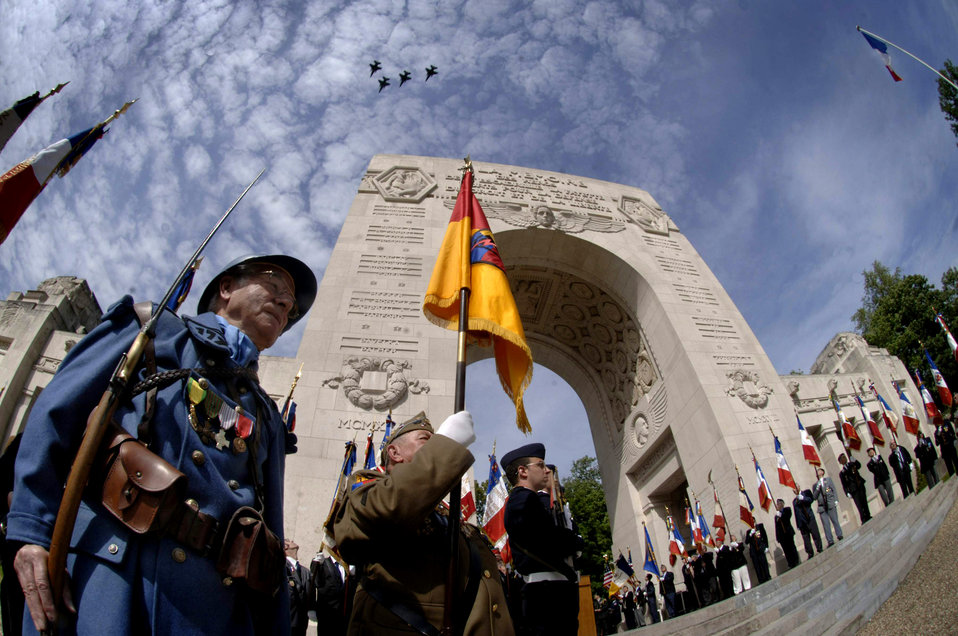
America's first combat aviators memorialized

A missing-man formation of F-16 Fighting Falcons follow French Mirages and a Naval Air Factory N3N biplane (not shown) in a flyover at the Lafayette Escadrille Memorial ceremony outside of Paris May 23. French and American citizens here paid homage to some of the United States' first combat aviators known as the Lafayette Escadrille. The all-American squadron of volunteers flew under the French flag during World War I. The F-16s belong to the 52nd Fighter Wing, Spangdahlem Air Base, Germany.